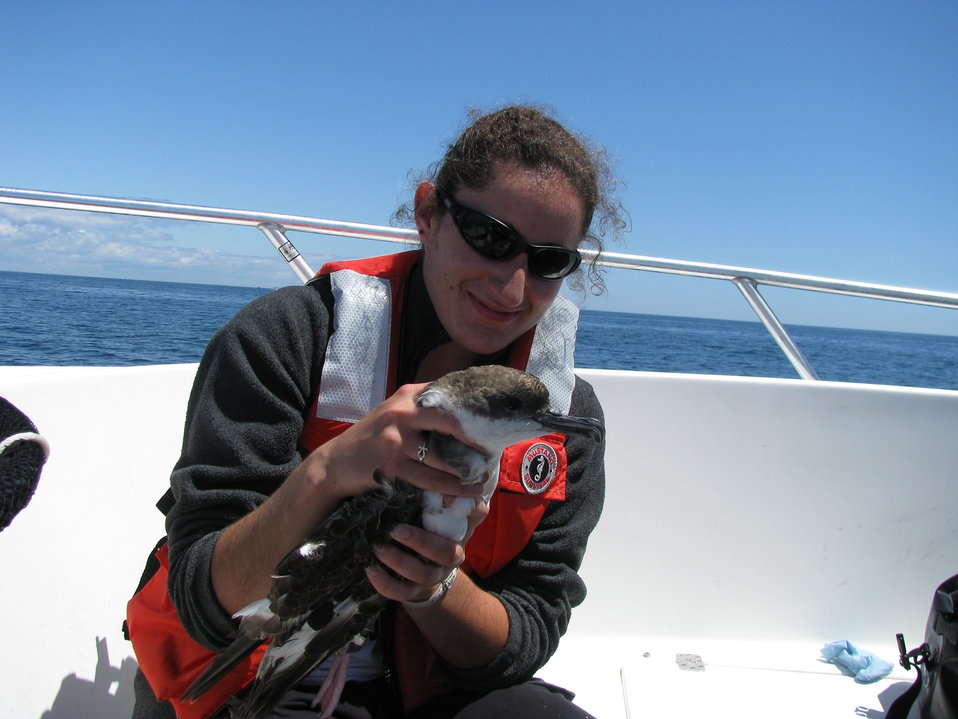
Tagging greater shearwater at the Gulf of Maine Coastal Program.